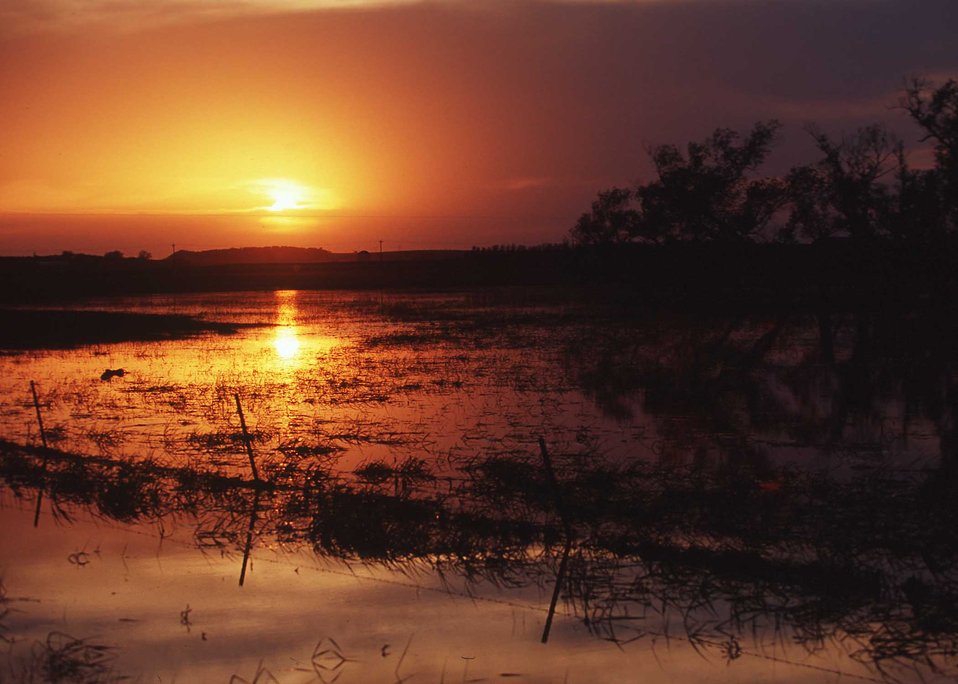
Sunset over lake in eastern South Dakota.